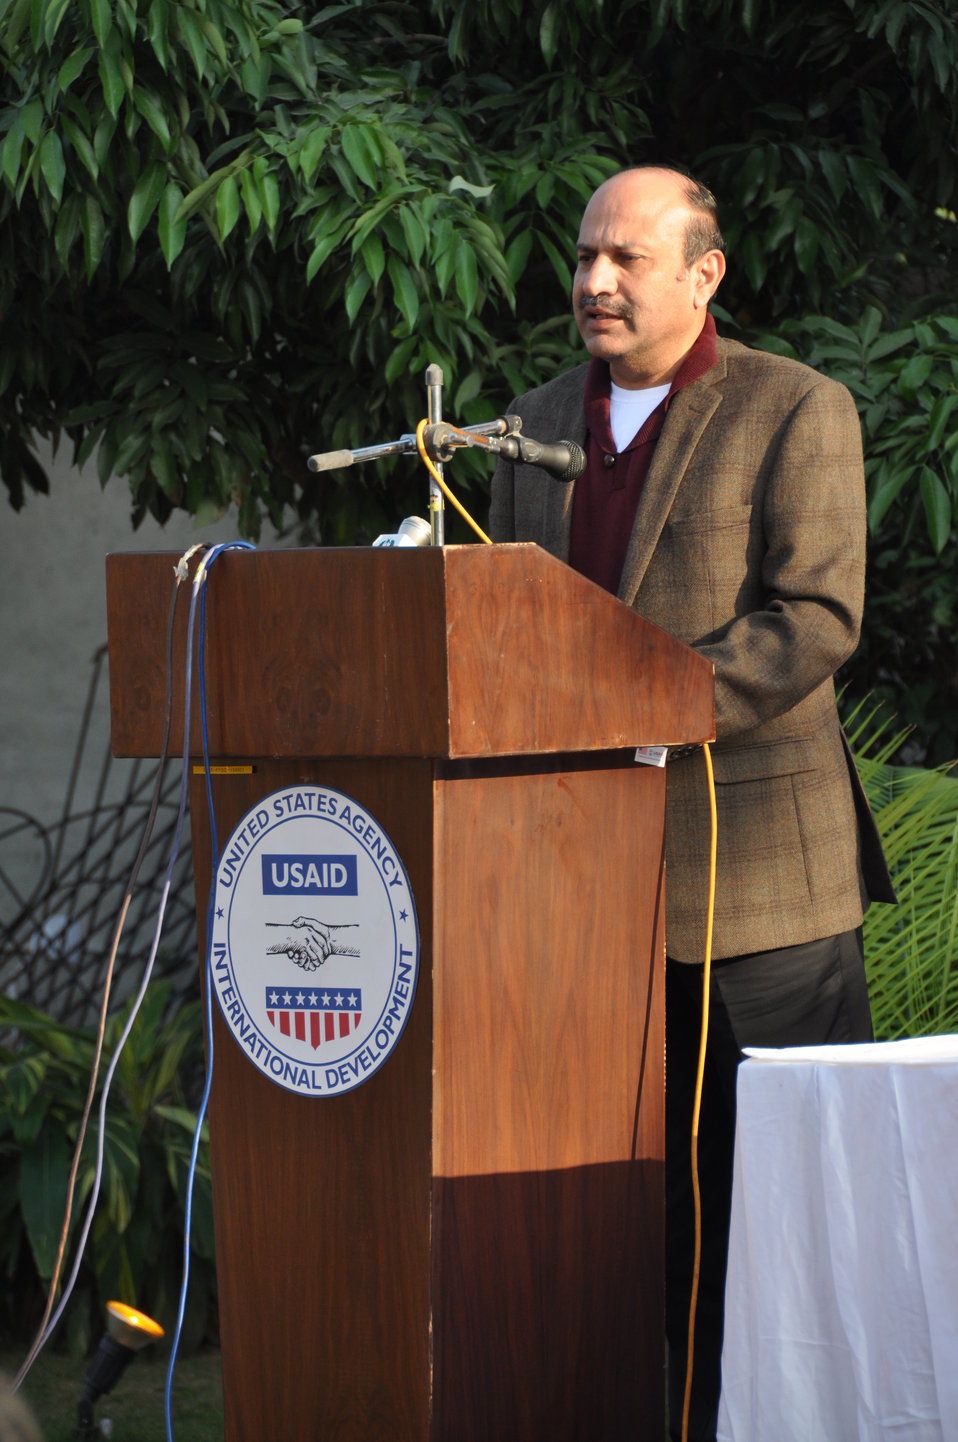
United States Government Strengthens PESCO Field Operations 15